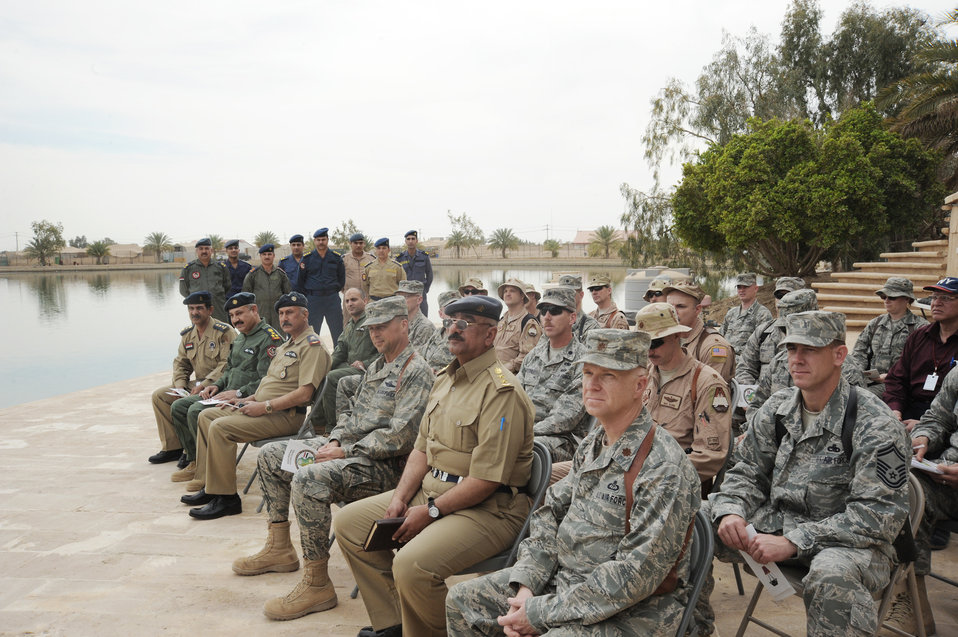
Iraqi weathermen graduate

A crowd gathers at Camp Victory, Iraq, March 25, 2010, for the graduation of the first class of Iraqi air force meteorology officers. The graduates will be sent to different locations throughout Iraq for 30 days of on-the-job training. Once the training is complete, some of the weather advisory officers will become instructors while others will begin their weather advisory mission for the Iraqi military.